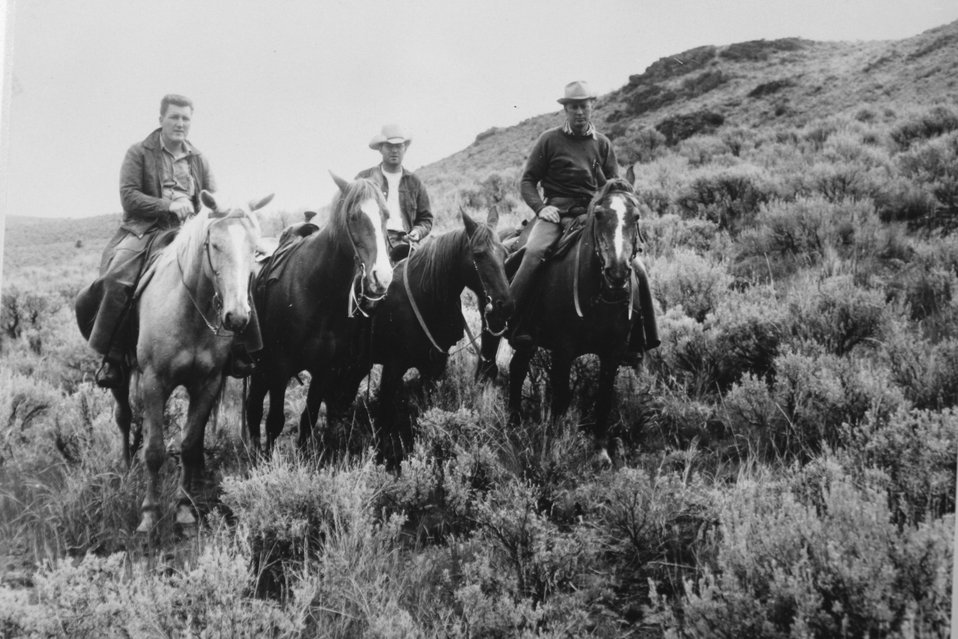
BLM Range Conservationists doing range imspection. circa 1950 - 1960. L - R: Don Getty, Jack McIntosh, Bud Town